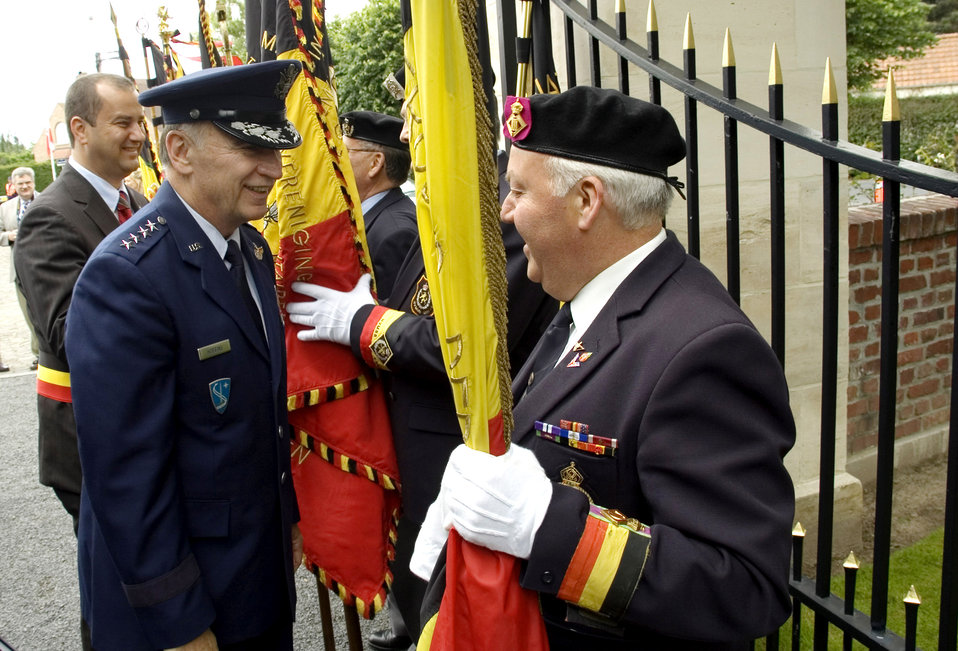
USAFE leader honors fallen heroes at Flanders Field

Gen. William T. Hobbins greets a ceremony participant May 27 at Flanders Field, Belgium. General Hobbins, the commander of U.S. Air Forces in Europe, paid tribute to the 368 servicemembers buried there who died in battle while liberating Belgium during World War II.